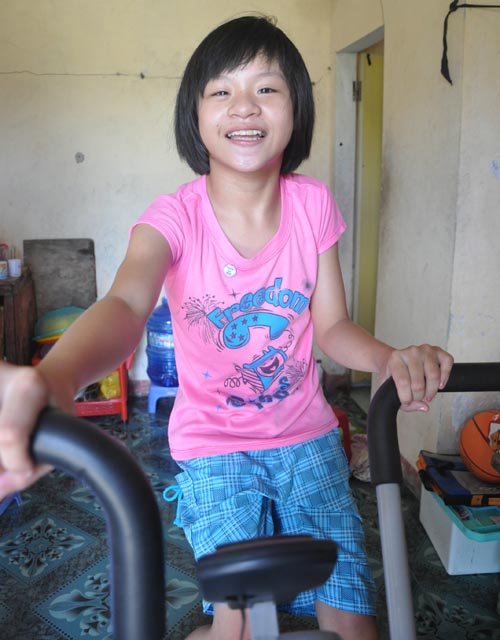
USAID support to persons with disabilities in Vietnam

Le Hoang Thi Truc Nhi receives support from a USAID activity in Danang.